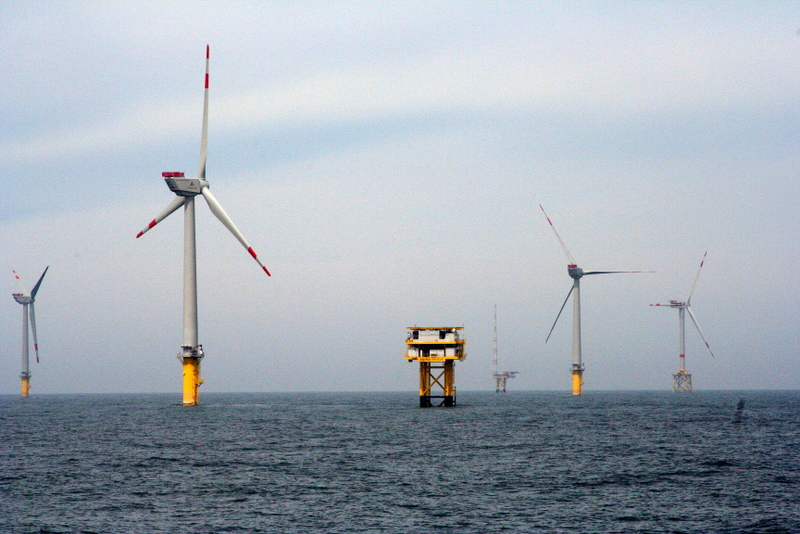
REPOWER 5 MEGAWATT OFFSHORE WIND TURBINES AND ENERGY SUBSTATION, ALPHA VENTUS OFFSHORE WIND FARM, GERMANY.